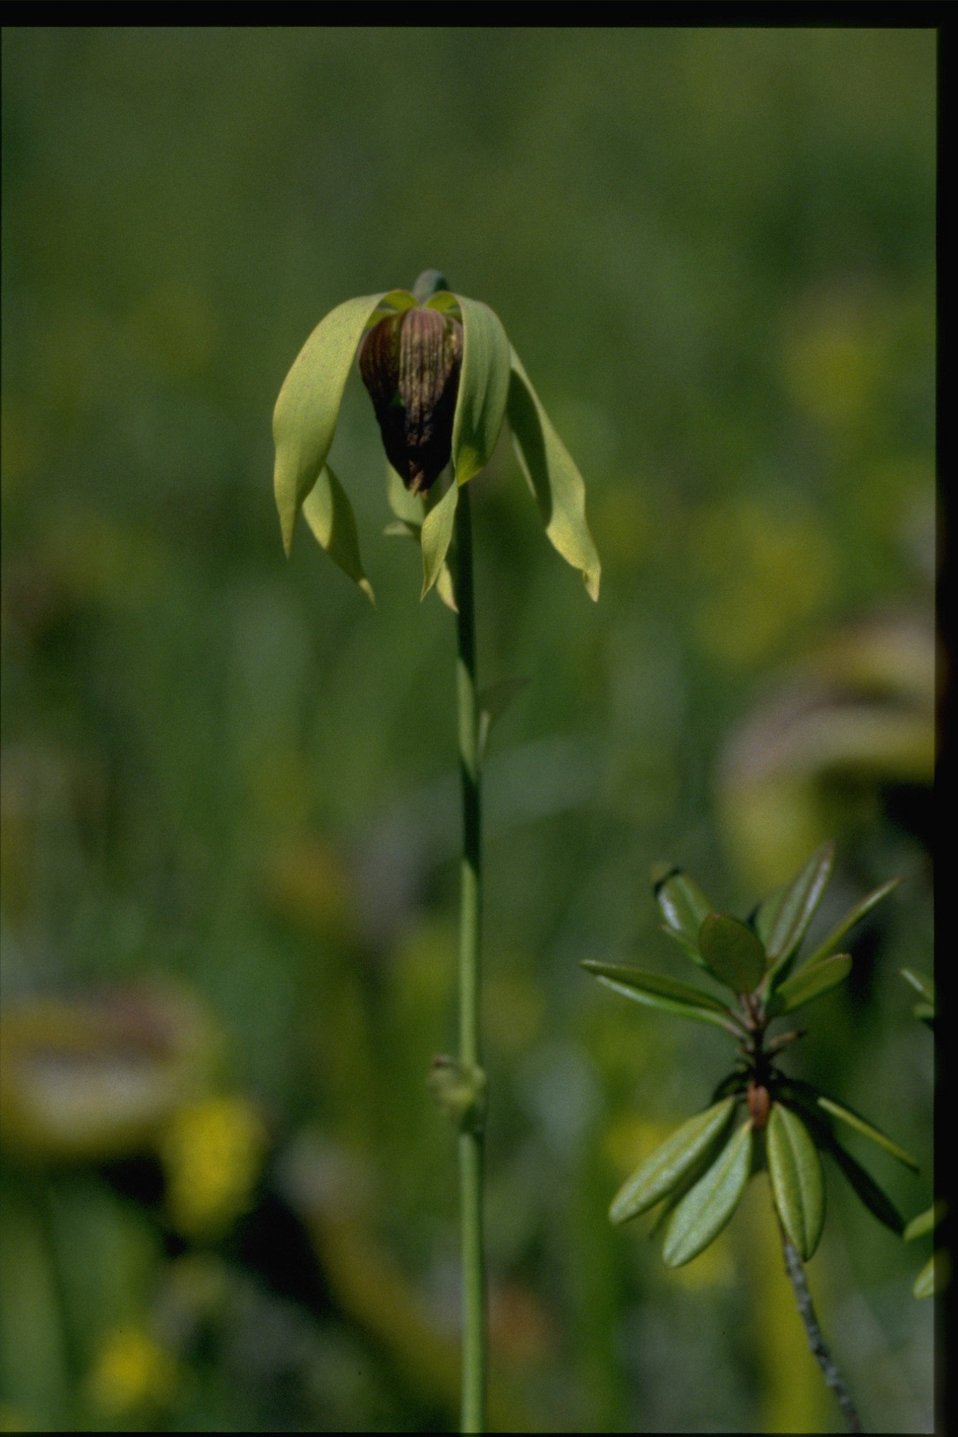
Closeup shot of Darlingtonia californica.